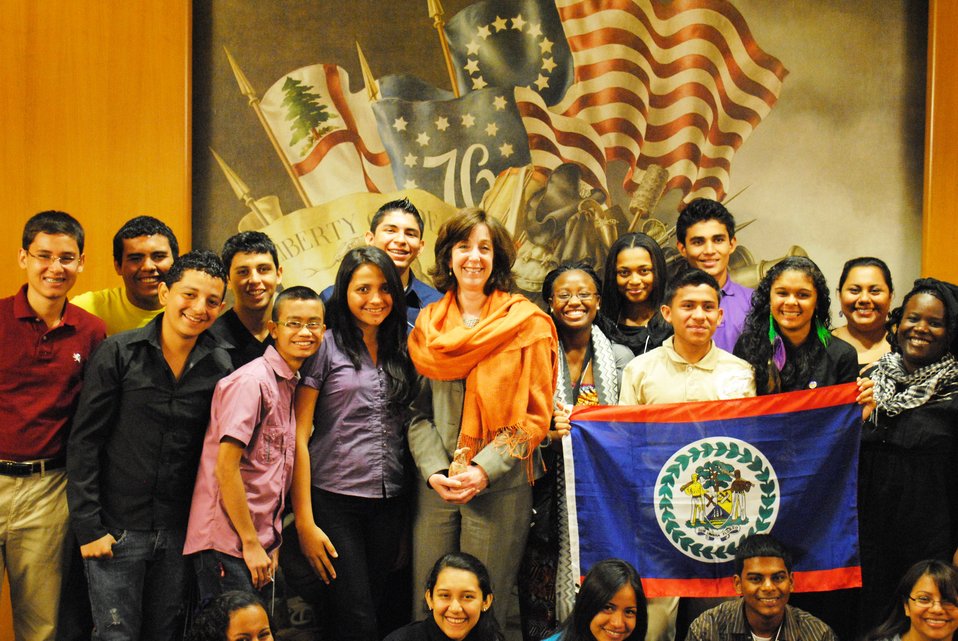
Assistant Secretary Jacobson Meets With Central American Youth Ambassadors

Assistant Secretary of State for Western Hemisphere Affairs Roberta Jacobson meets with the Central American Youth Ambassadors at the U.S. Department of State in Washington, D.C., on March 11, 2013.